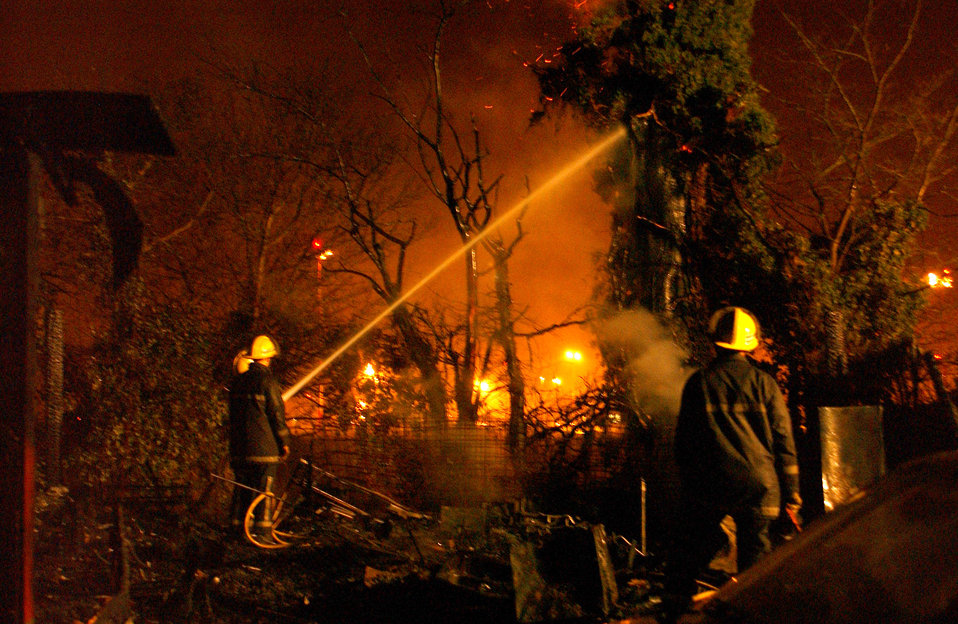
Air Force, British firemen dampen off-base blaze

Air Force firefighters joined local British firefighters Feb. 21 to staunch a blaze soaring 50-feet high near RAF Mildenhall, England. Firefighters from 100th Civil Engineer Squadron at RAF Mildenhall joined firefighters from the Suffolk Fire Service at the off-base location. Together, they contained the fire preventing nearby structures and vehicles from being consumed.